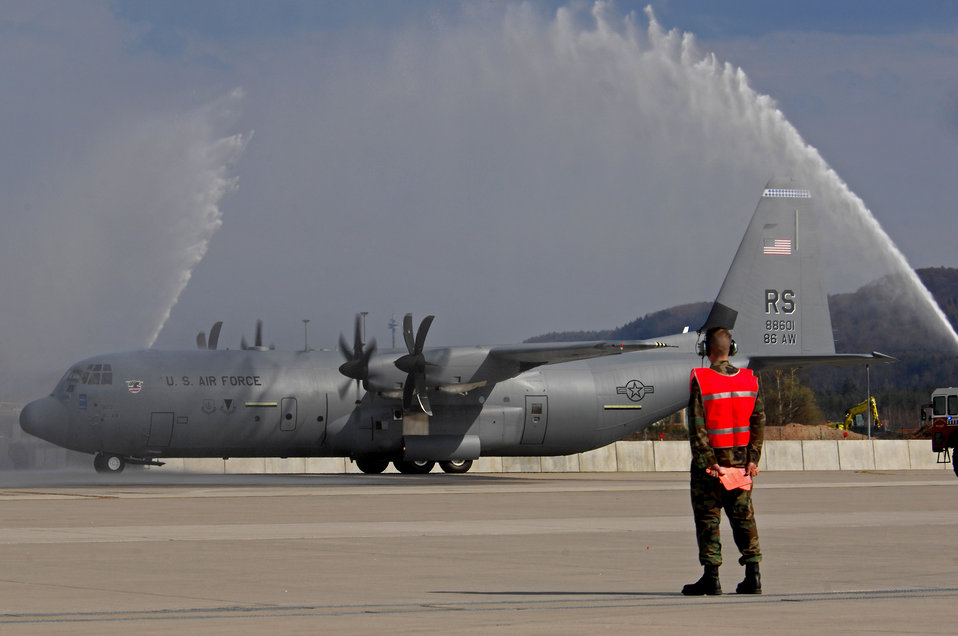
A wet welcome to Ramstein!

A C-130J Super Hercules, the first for Ramstein Air Base, Germany, taxies under a celebratory water spray from two base fire trucks April 7 during a welcome ceremony at Ramstein. The ceremony honored the arrival of the aircraft, and a new era in operations for the 86th Airlift Wing.